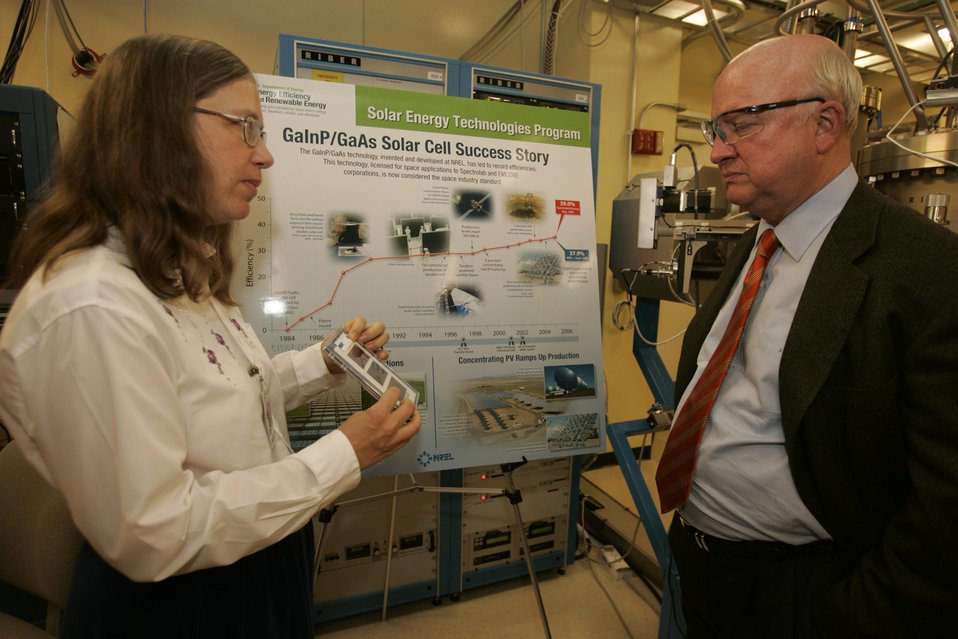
SECRETARY OF ENERGY SAMUEL BODMAN RECEIVES A BRIEFING AT NREL'S SOLAR CELL RESEARCH LABORATORY.

RESEARCHER SARAH KURTZ CONDUCTED A TOUR OF THE SOLAR CELL RESEARCH LABORATORY FOR SECRETARY OF ENERGY BODMAN DURING HIS VISIT TO THE NATIONAL RENEWABLE ENERGY LABORATORY ON JUNE 13, 2005.